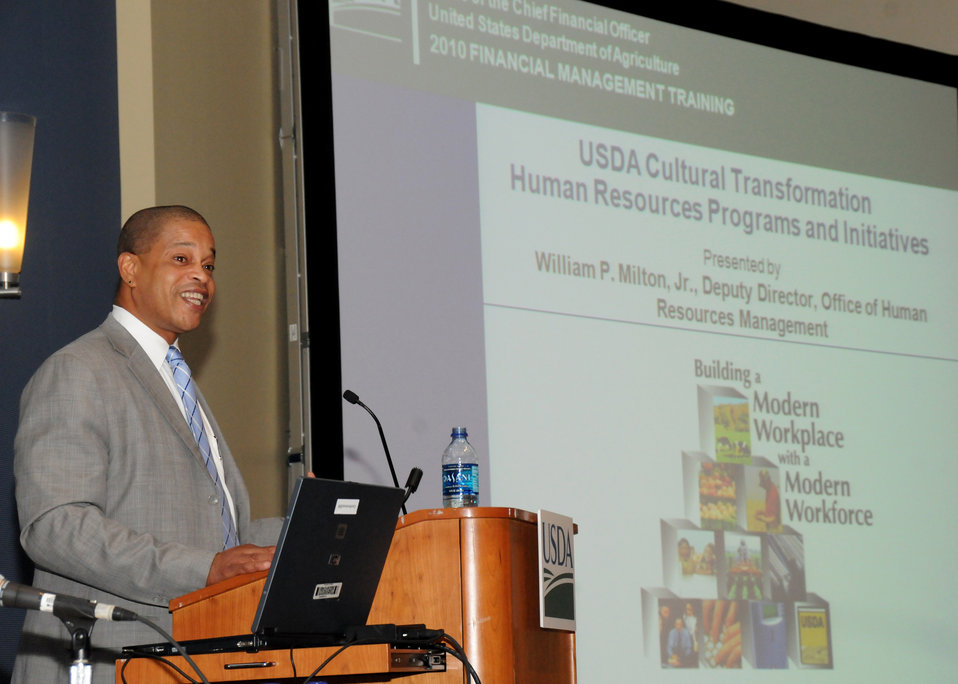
Agriculture Department of Management Deputy Director of the Office of Human Resources Management William Milton speaks to participants at the Financial Management Training conference held in Washington, D.C., on Thursday, May 27, 2010. Mr. Milton spoke regarding the U. S. Department of Agriculture (USDA) Cultural Transformation initiative at the department and its impact on USDA Human Resources policies and programs. USDA photo 10di1373-88.